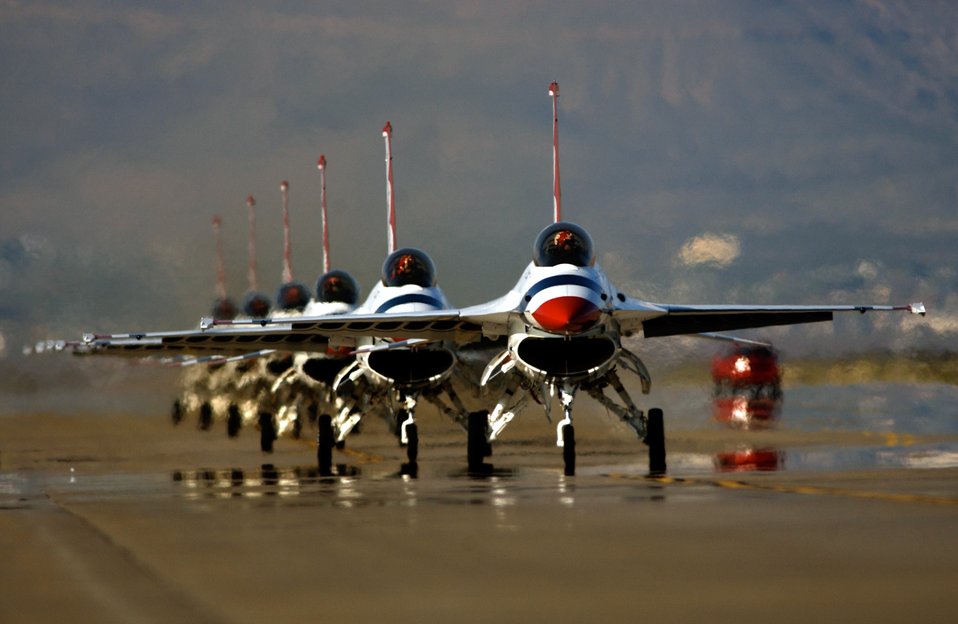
Good show

HOLLOMAN AIR FORCE BASE, N.M. -- The U.S. Air Force Thunderbirds taxi back after a successful airshow demonstration here April 17.